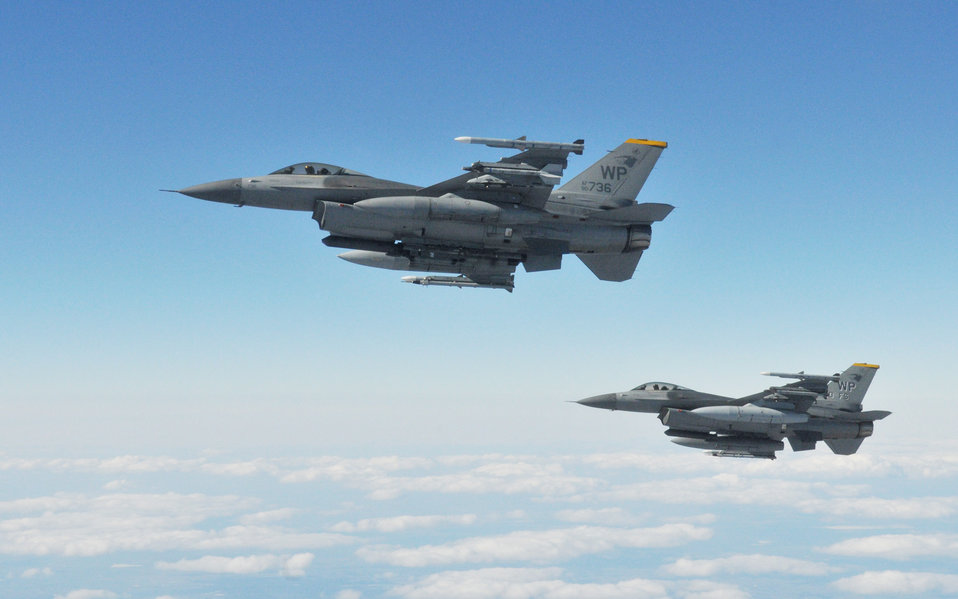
F-16s participate in Red Flag-Alaska

Two F-16 Fighting Falcons pilots maintain their position as they wait for the rest of their four-ship formation to refuel during Red Flag-Alaska April 27, 2010.